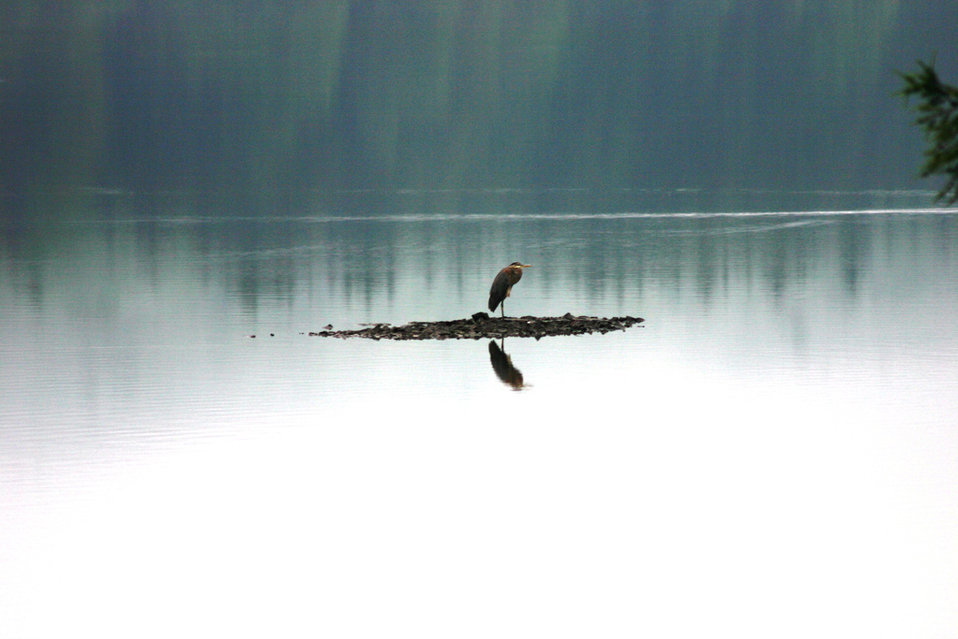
bengston

Uploaded by request of Melissa Bengtson.

This photo was taken last year by one of our patrol officers. This photo represents a peaceful living experience for our wildlife animals that visit MDC property.